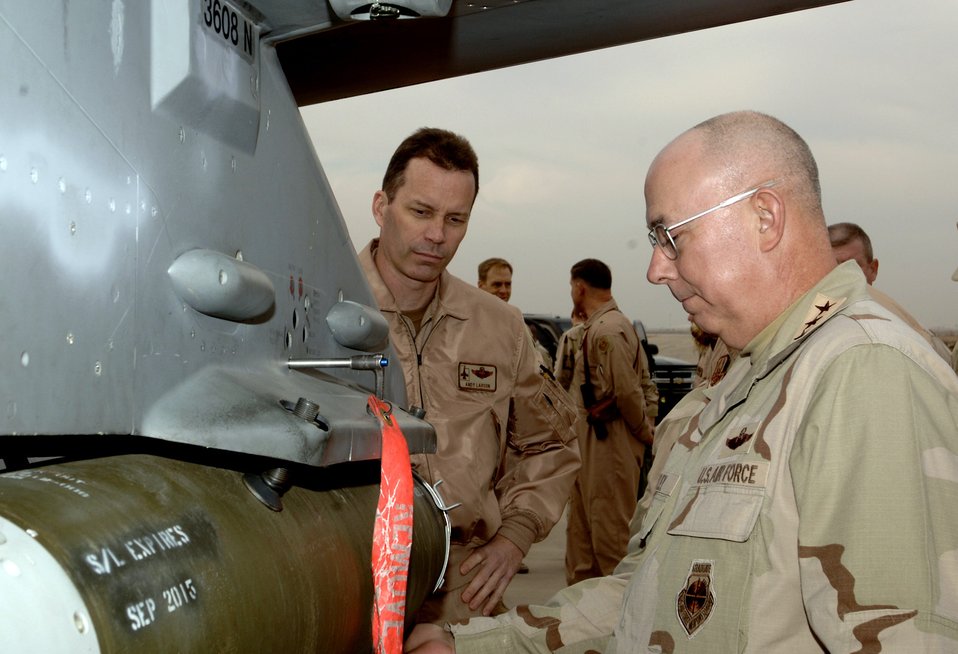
Chief's visit

BALAD AIR BASE, Iraq (AFPN) -- Air Force Chief of Staff Gen. T. Michael Moseley examines a joint direct attack munition loaded on an F-16 Fighting Falcon with Lt. Col. Andrew Larson. Colonel Larson is with the 332nd Expeditionary Fighter Squadron.